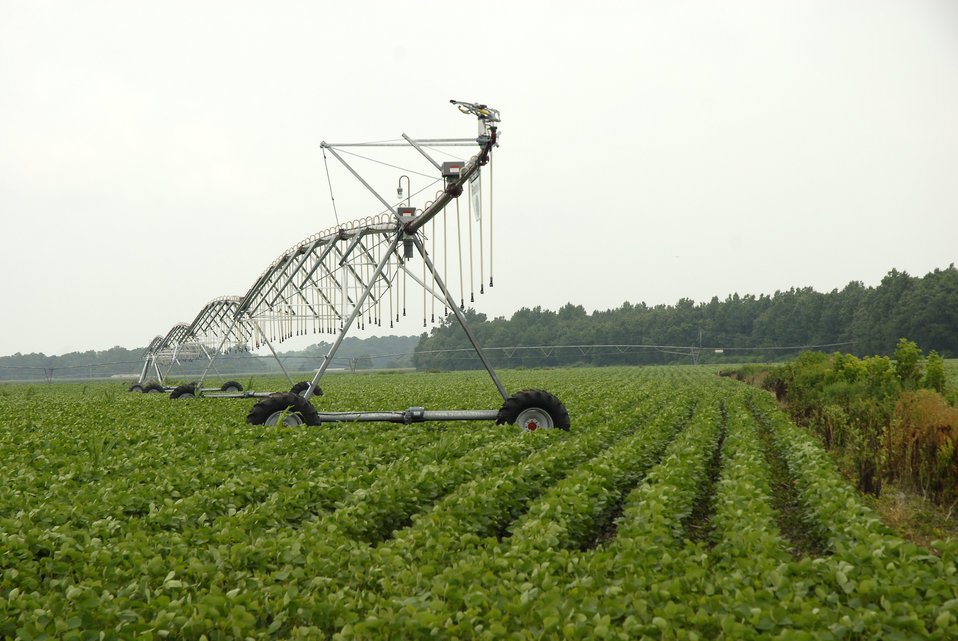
A U.S. Department of Agriculture (USDA) Natural Resources Conservation Service (NRCS) employee examines the control box of a center pivot irrigation system on a Delaware farm on July 8, 2008. As part of the Conservation Effects Assessment Project (CEAP) study of the Chesapeake Bay region by the USDA NRCS some farmers use a center pivot irrigation system. Center pivot irrigation is a method of crop irrigation in which equipment rotates around a pivot. This center pivot irrigation system is using Low Elevation Spray Application (LESA) system, which uses less water and reduces evaporation.